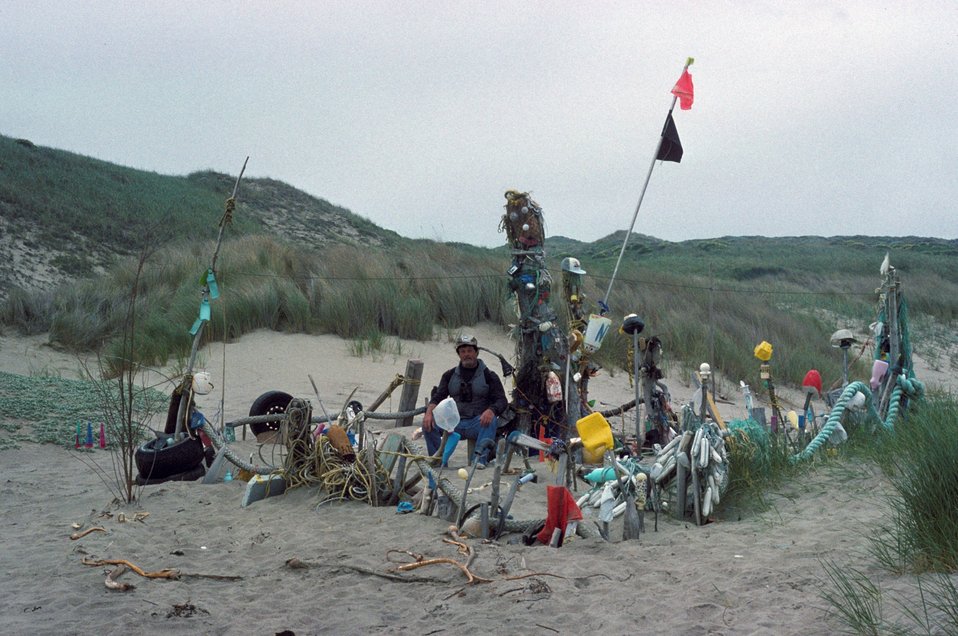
Point Reyes Great Beach. Building a beach home from marine debris.